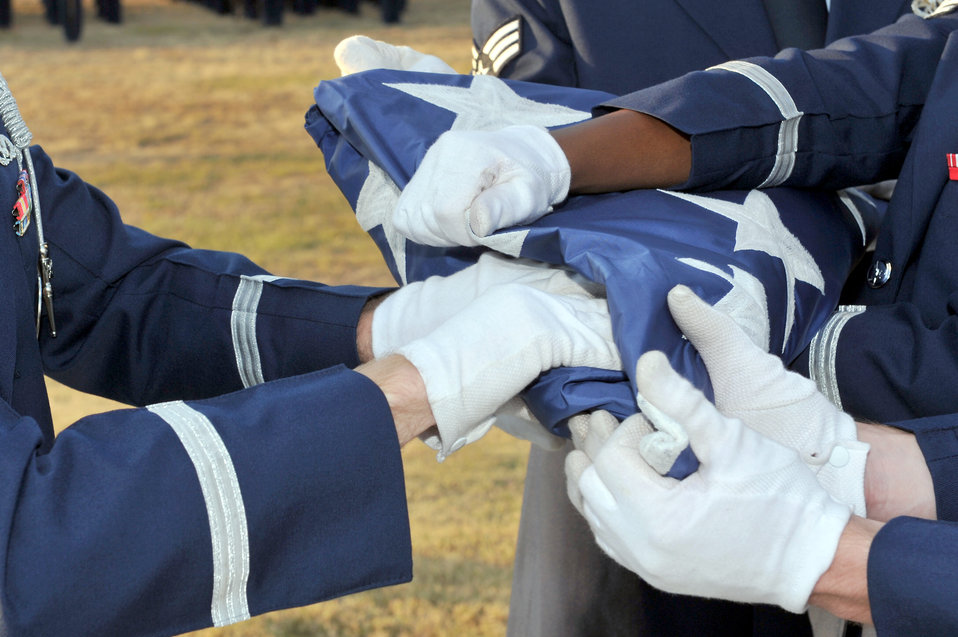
Veterans Day retreat ceremony

Honor guard members at Little Rock Air Force Base, Ark., fold the flag at the Veterans Day retreat ceremony Nov. 10, 2010.